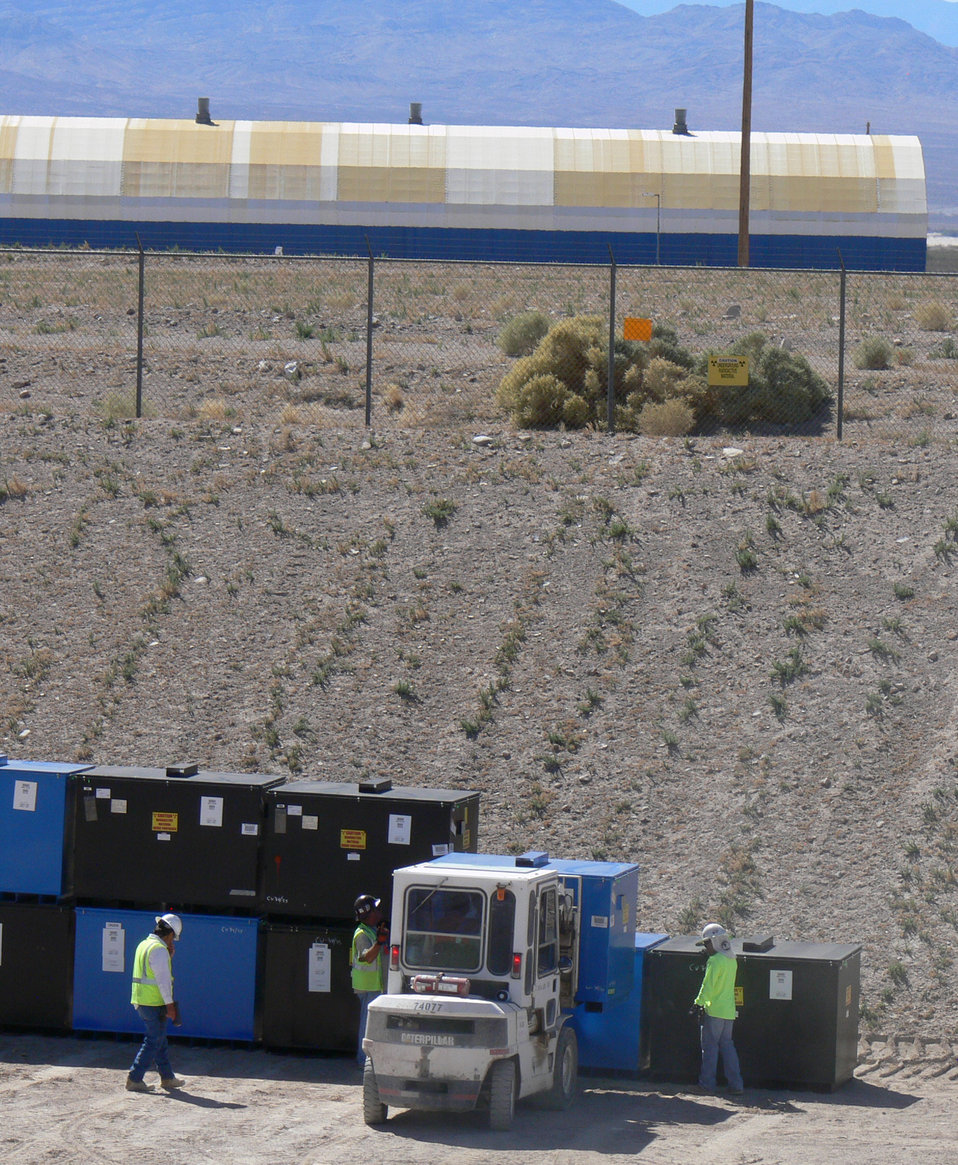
Waste disposed at the Area 5 Radioactive Waste Management Site was generated cleanup activities on the Nevada National Security Site.
Low-level radioactive waste disposal at the NNSS has recently gone into high gear as a result of the American Reinvestment and Recovery Act funding.